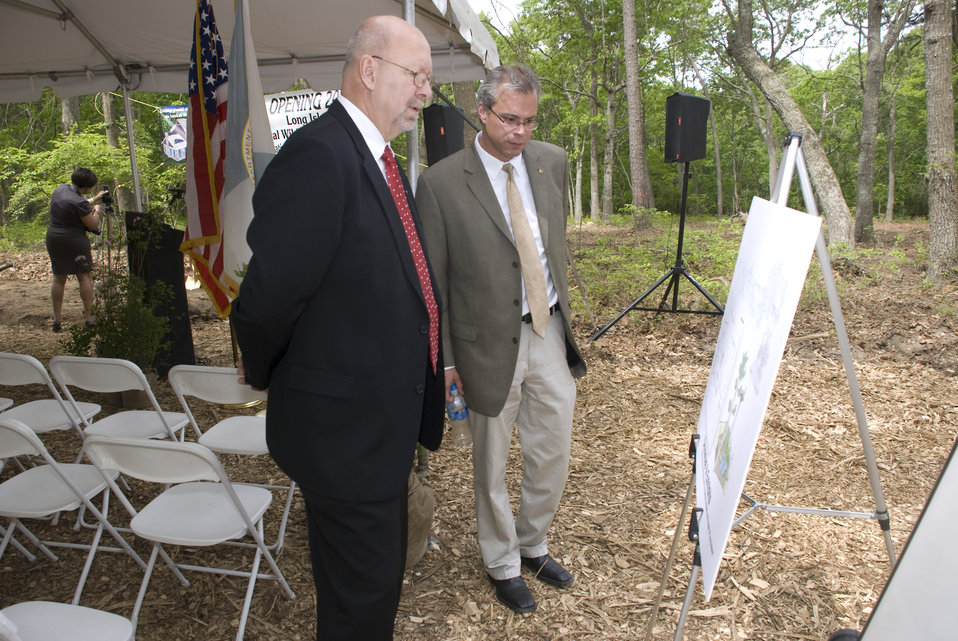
Project partners at groundbreaking